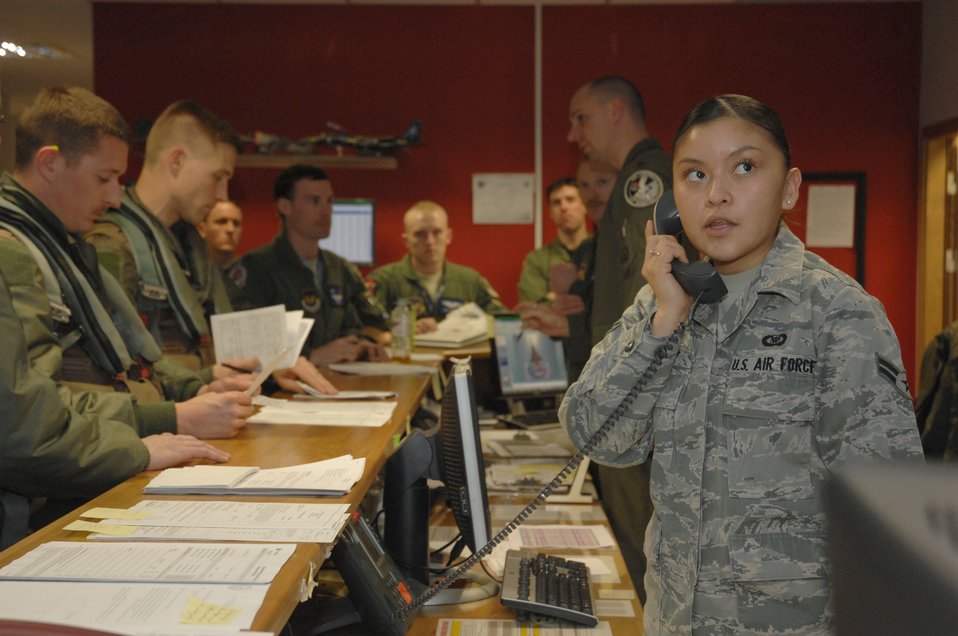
Odyssey Dawn

Airman 1st Class Amanda Varady, 494th Fighter Squadron aviation resource manager, relays information during a step brief for F-15E Strike Eagle crew members prior to their departure from RAF Lakenheath, England, March 19, 2011. Units from the 48th Fighter Wing are currently conducting pre-deployment procedures in support of Operation Odyssey Dawn. The 48th Fighter Wing provides all-weather, day or night air superiority and air-to-ground precision combat capability as well as combat search and rescue.